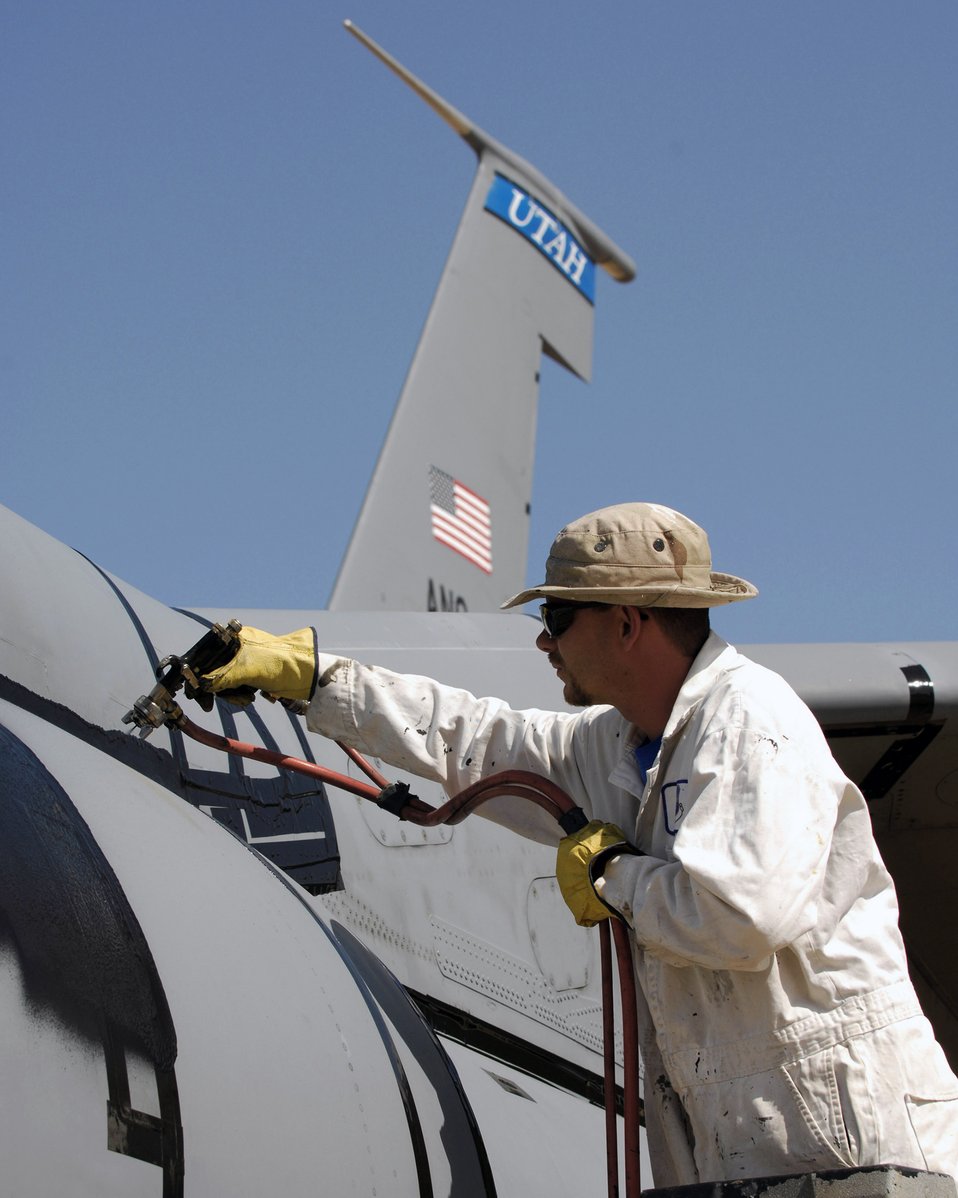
48-year-old KC-135 retires

Sam Wilkins prepares a KC-135 E model Stratotanker for storage April 25 at Davis-Monthan Air Force Base, Ariz. The 48-year-old aircraft was delivered for long term storage at the 2,600 acre facility after serving with the 151st Air Refueling Wing of the Utah Air National Guard for more than 20 years. Mr. Wilkins is a spray-lat technician with the 578th Storage and Disposal Squadron.